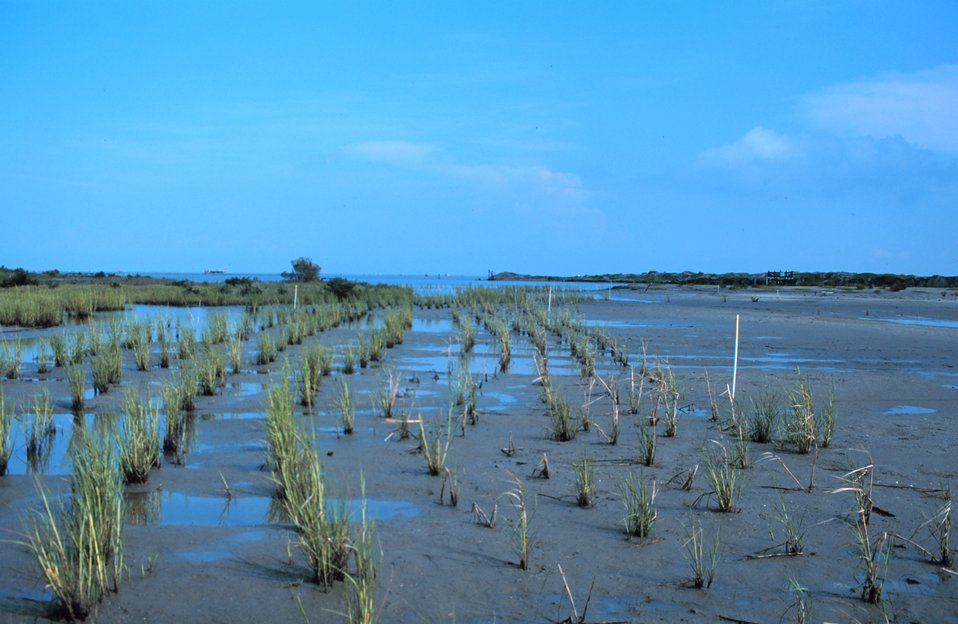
Smooth cordgrass, Spartina alterniflora, a salt marsh plant native to the area is planted in rows to encourage rapid colonization of the restoration area and to prevent erosion of the newly created marsh platform.